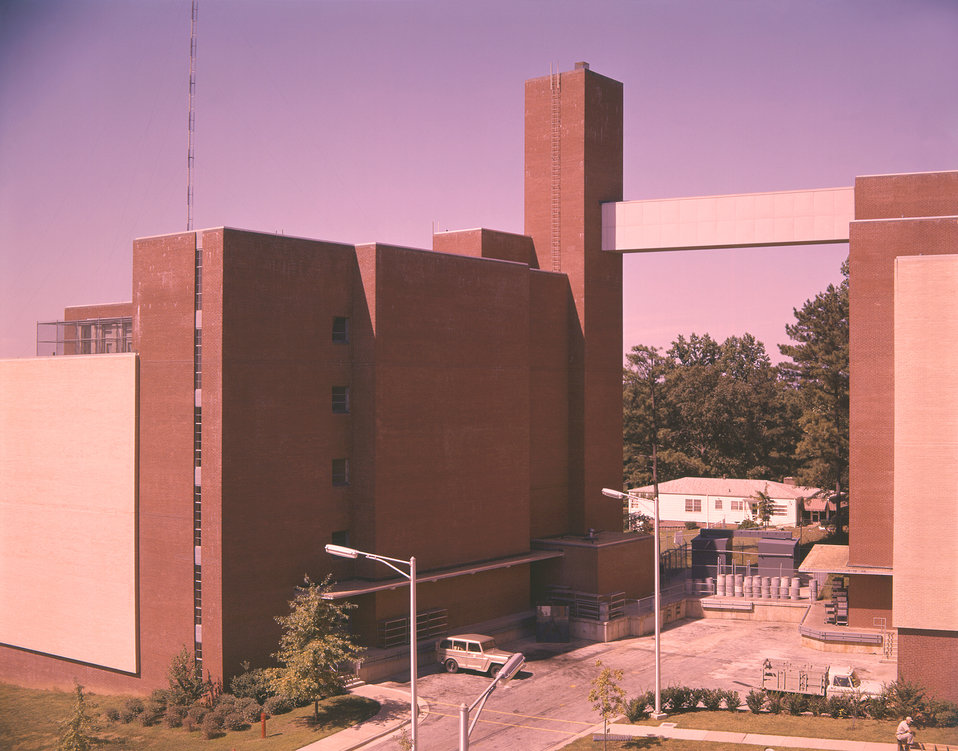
This historic view, looking towards the west, south-west, depicts the appearance of the Centers for Disease Control and Prevention's (CDC) geographic presence in 1963. In this particular view, the corner of building 4, and facing building five are highlighted.